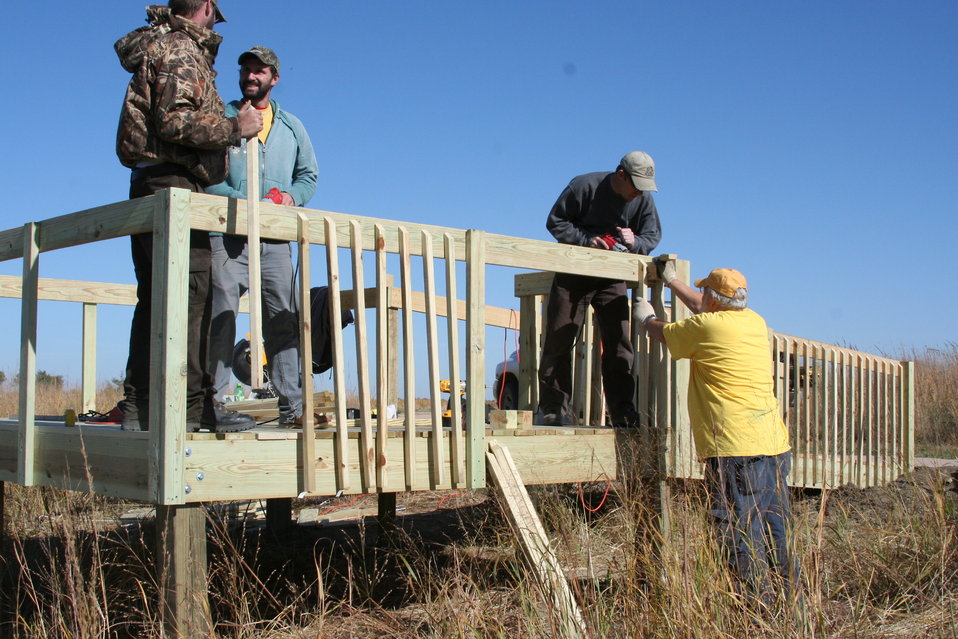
New Observation Deck

Staff & volunteers in the process of constructing our new observation deck. The deck is on our Maga Ta-Hohpi WPA overlooking one of it's many wetlands.